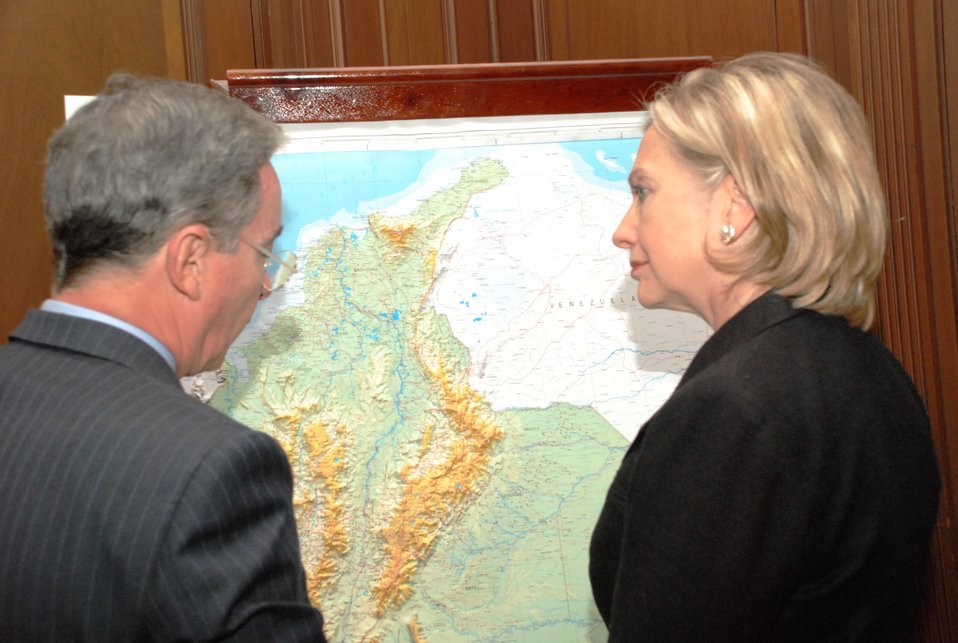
Secretary Clinton and Colombian President Discuss Issues During Private Meeting

U.S. Secretary of State Hillary Rodham Clinton and Colombian President Uribe consult during a private meeting in Bogotá, Colombia on June 9, 2010.